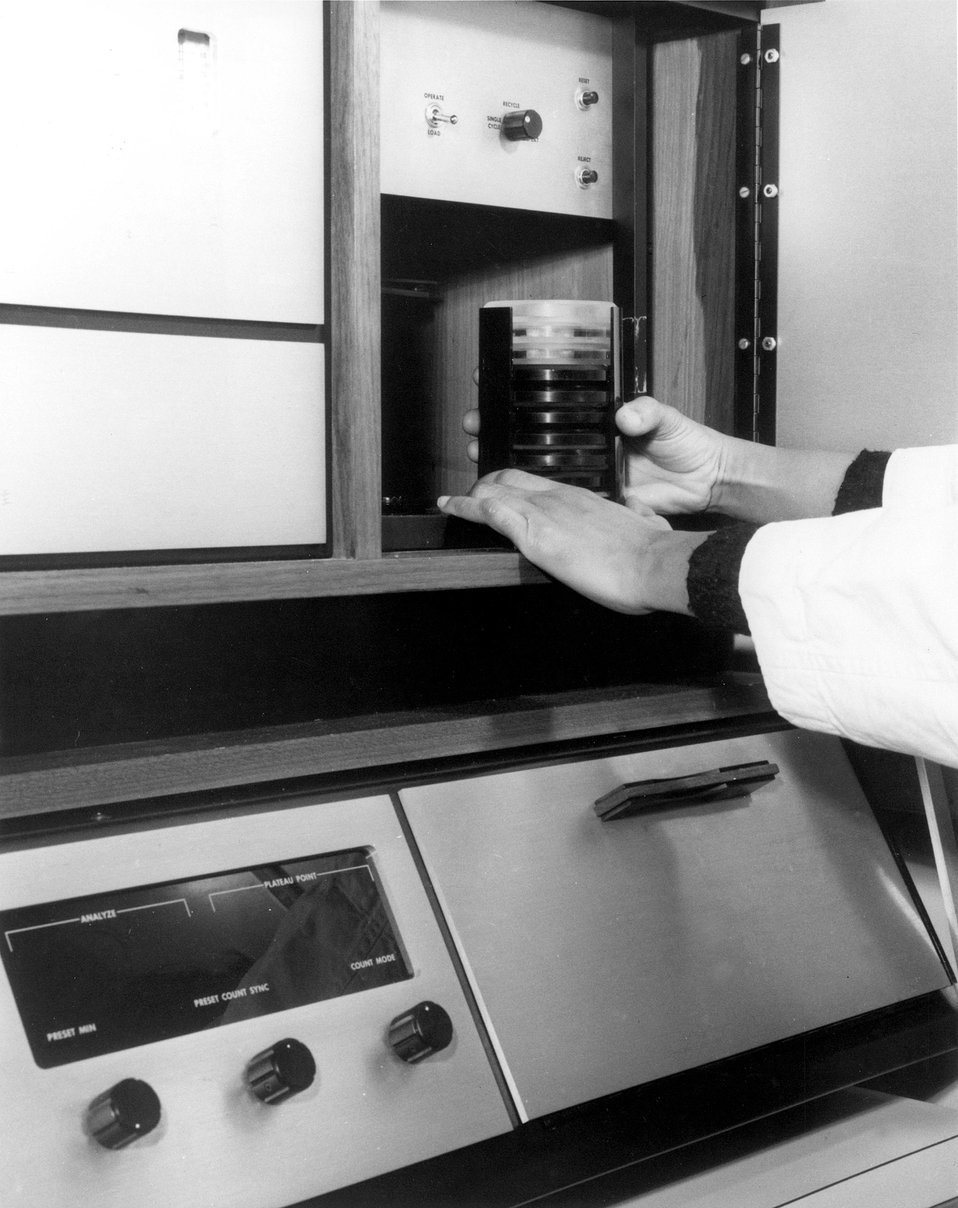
Filter sample of strontium 89 and/or 90 as it is placed in wide Bela II counter at the Atomic Energy Commission's National Reactor Testing Station in Idaho. Circa 1974.